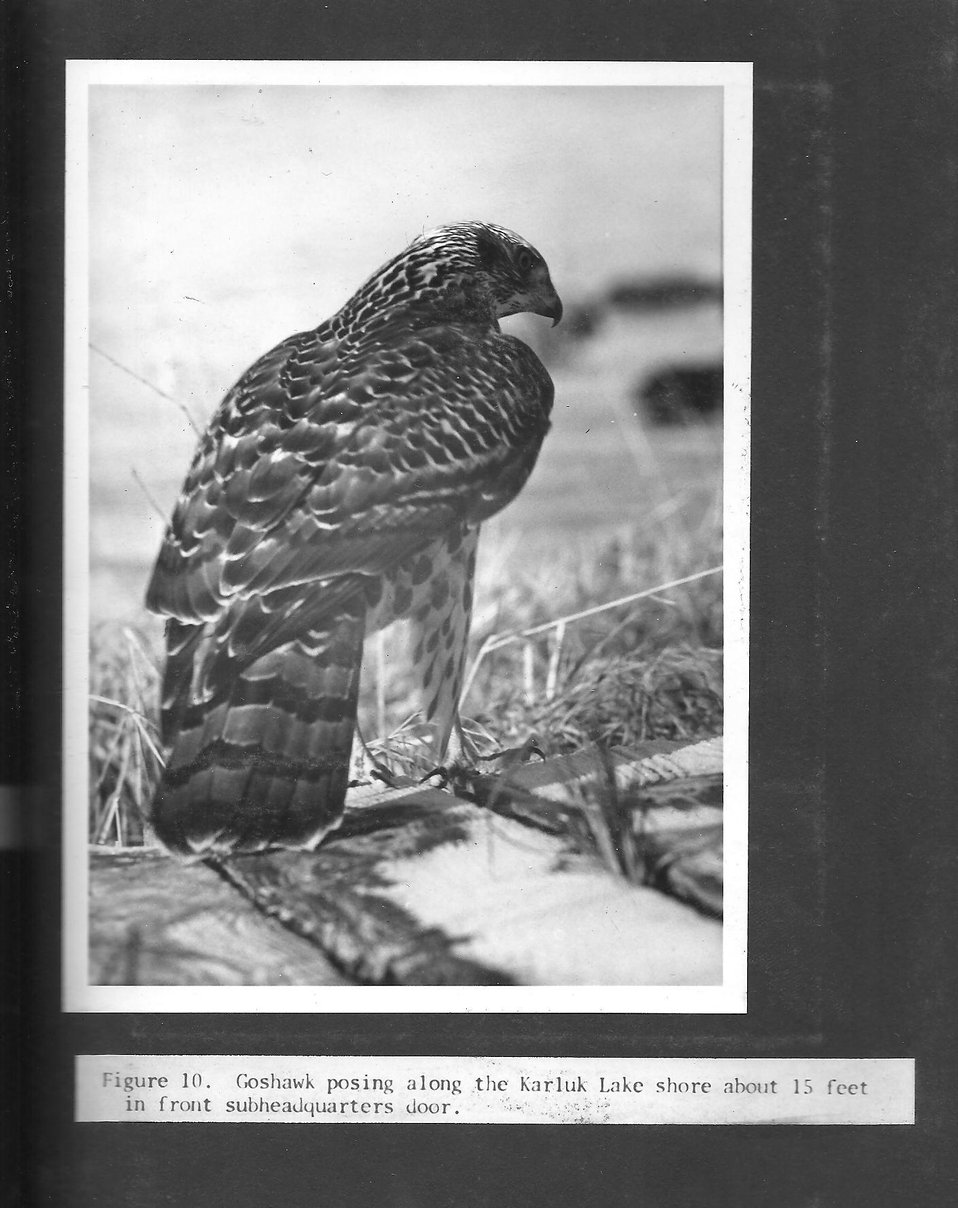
(1965) Goshawk

Credit: USFWS

Source and Contact: Kodiak National Wildlife Refuge